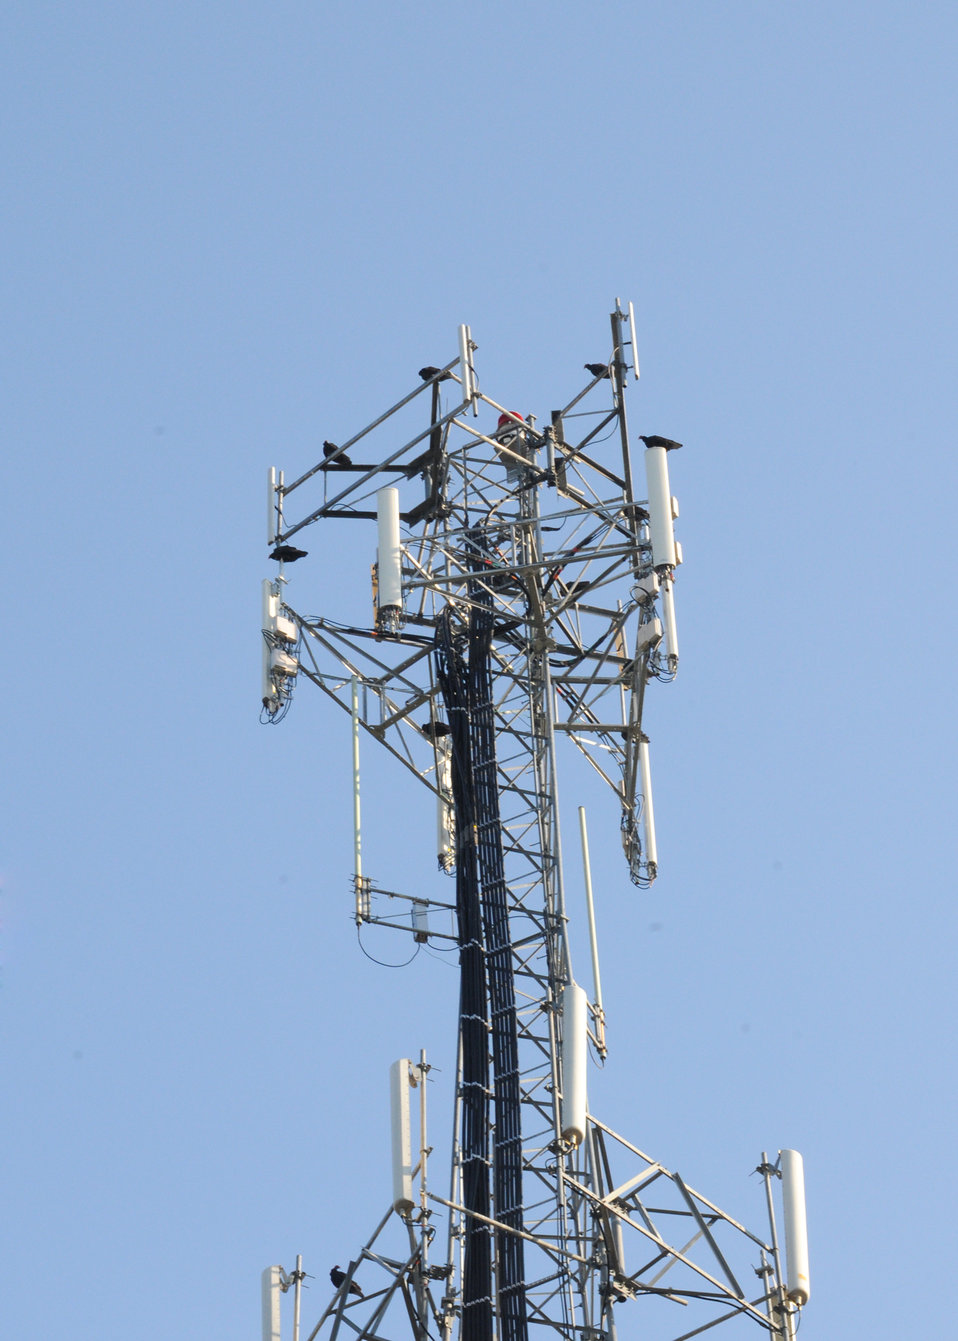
A new cell tower in Medicine Park, Oklahoma, services Commanche county.